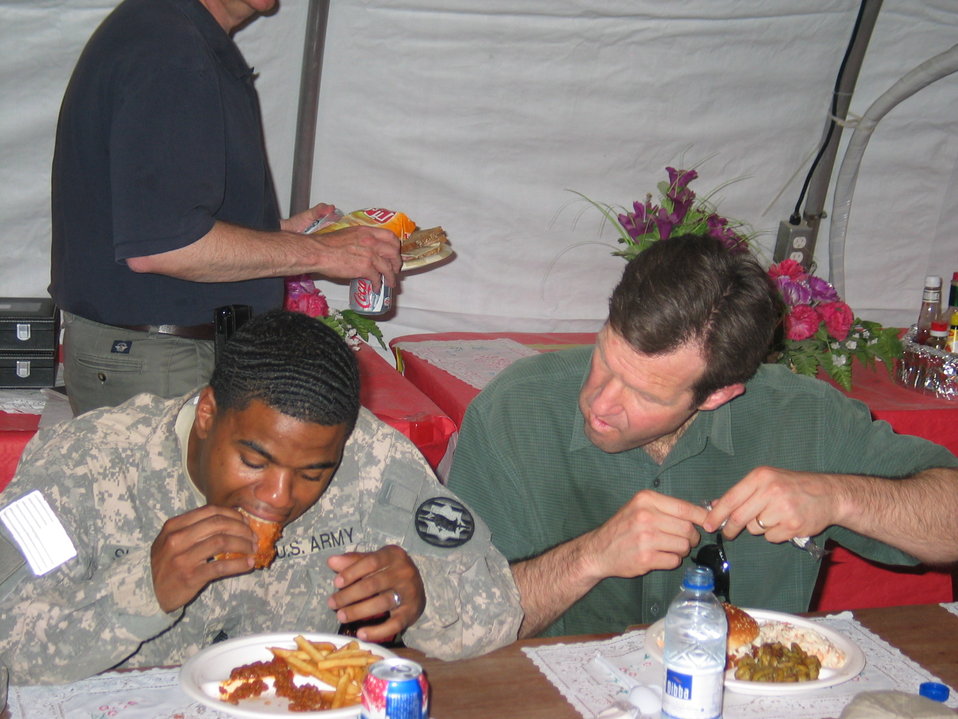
CODEL Berman